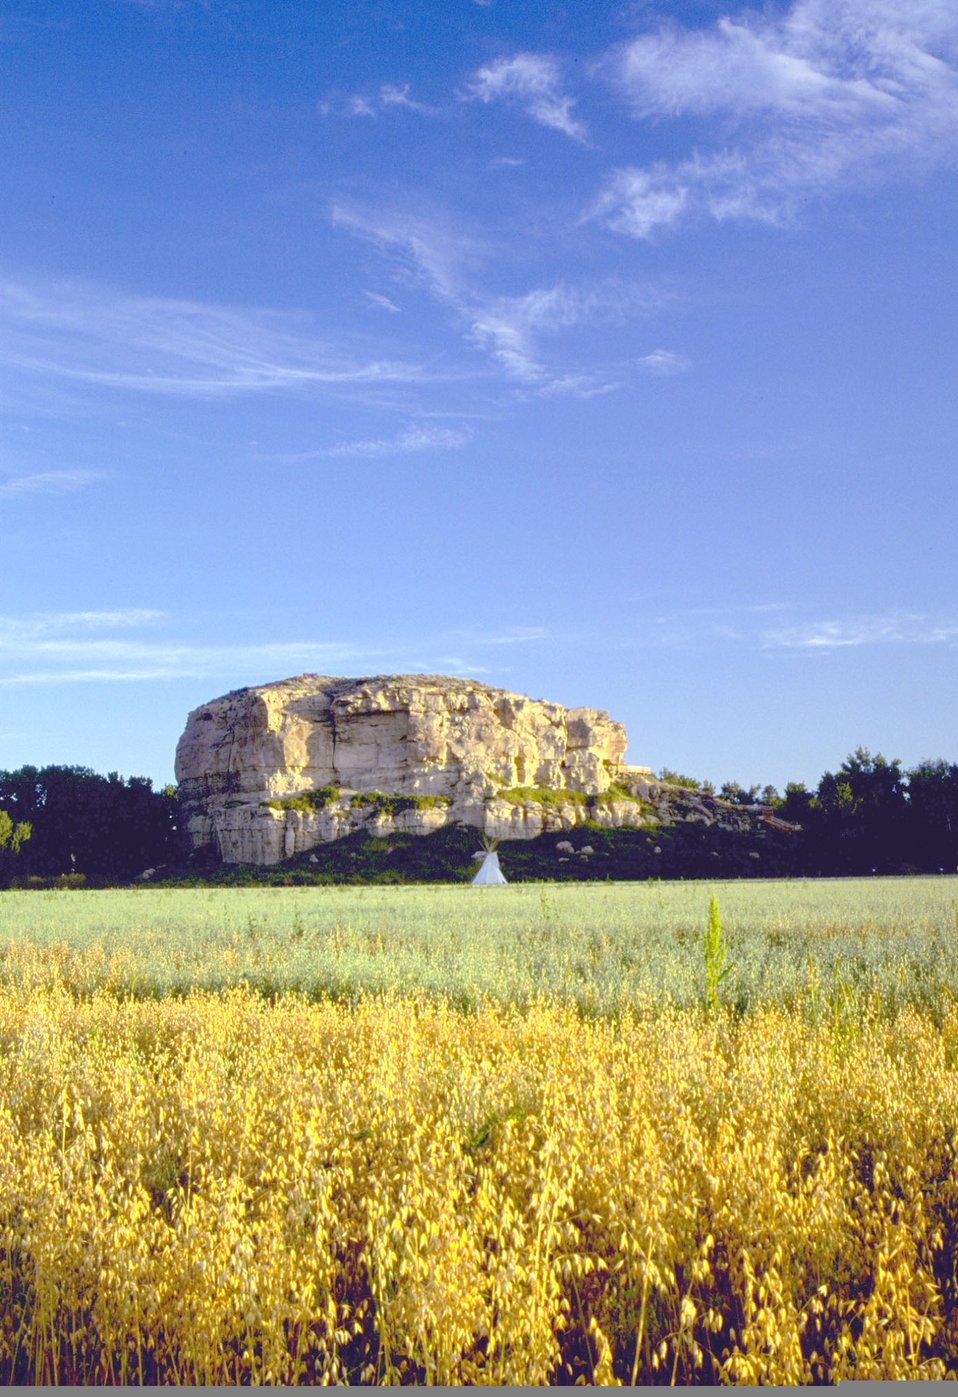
Pompeys Pillar